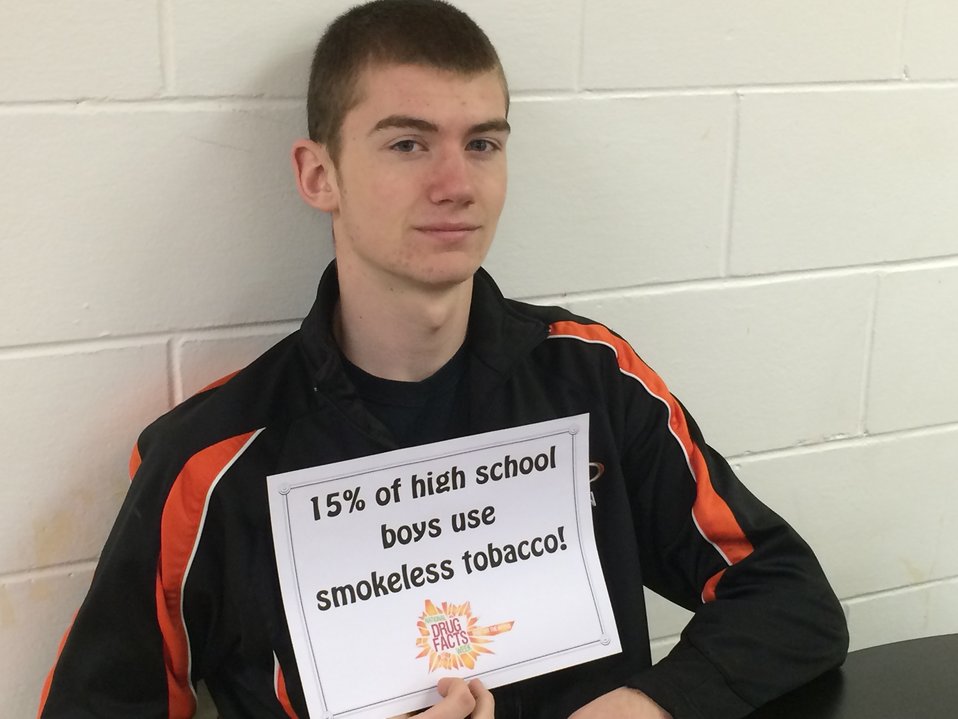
Getting the Word Out

Teenagers from the Van Buren County SAFE Coalition's, Youth Leadership Council (YLC) in Keosauqua, Iowa participate in various events during National Drug Facts Week, 2014.